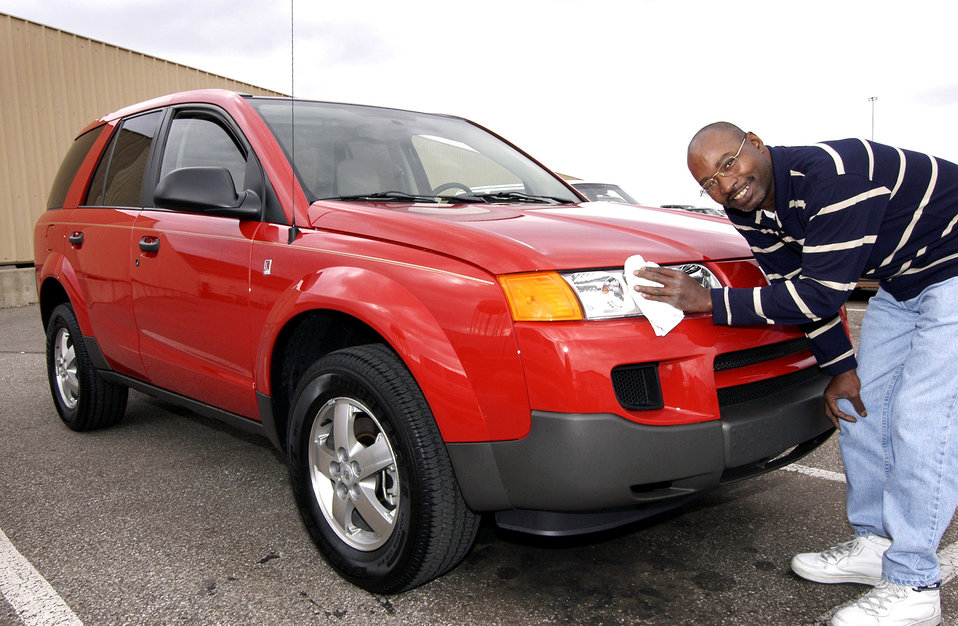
Skeptical blood donor wins new SUV

TINKER AIR FORCE BASE, Okla. -- Ron Bagby is a frequent blood donor, but almost did not enter an Oklahoma Blood Institute drawing to win a car when he donated recently. His entry, one of thousands from several area blood donation sites, was selected, and he won a new Saturn Vue. Mr. Bagby is a mechanic at the Oklahoma City Air Logistics Center here.